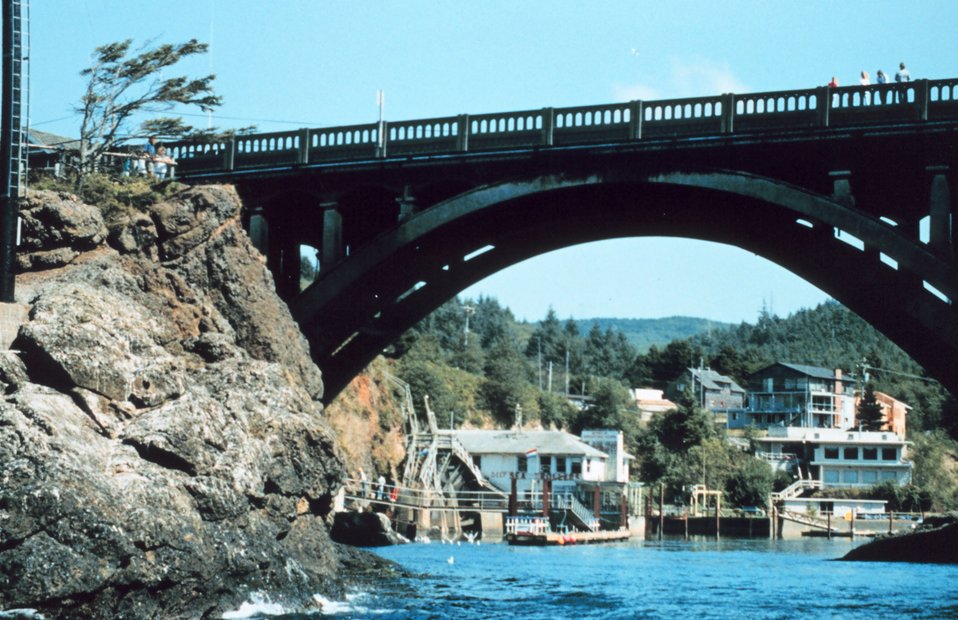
Entrance to Depoe Bay, known as the 'World's Smallest Harbor.' 15 miles north of Newport, Oregon.